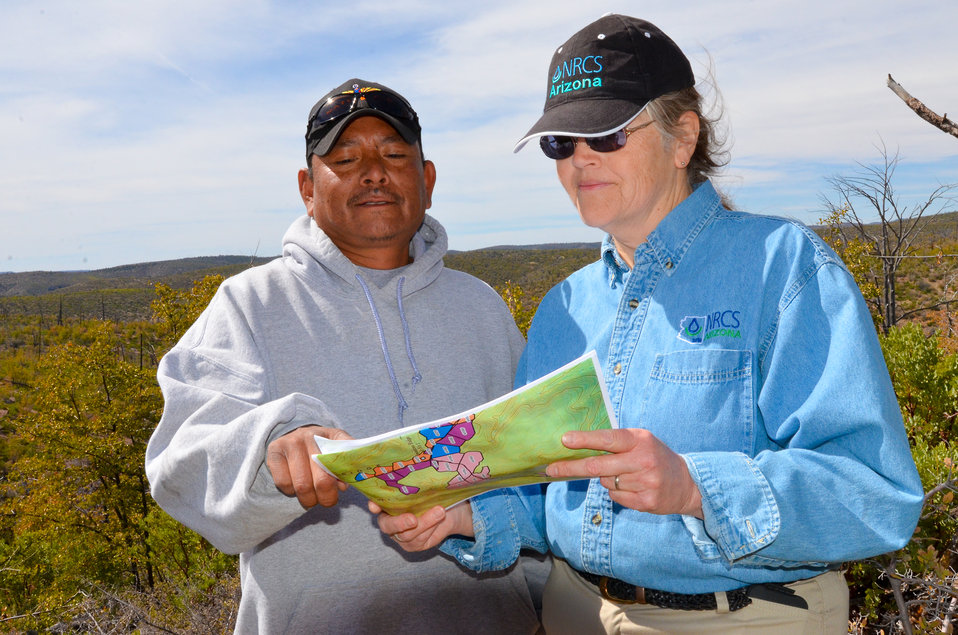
White Mountain Apache Arizona-288

White Mountain Apache Tribe’s forestry department employee Daniel Kessay and U.S. Department of Agriculture (USDA) Natural Resource Conservation Service (NRCS) employee Jan Pertruzzi review plans for ponderosa pine tree plantings in Whiteriver, AZ.